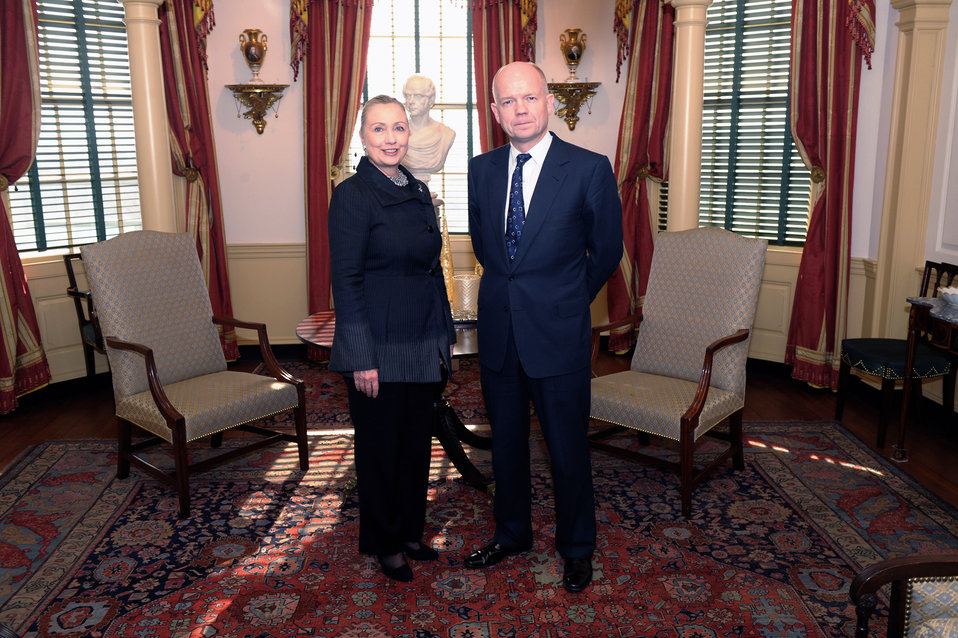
Secretary Clinton Meets With UK Foreign Secretary Hague

U.S. Secretary of State Hillary Rodham Clinton meets with UK Foreign Secretary William Hague, at the U.S. Department of State in Washington, D.C., on December 12, 2011.